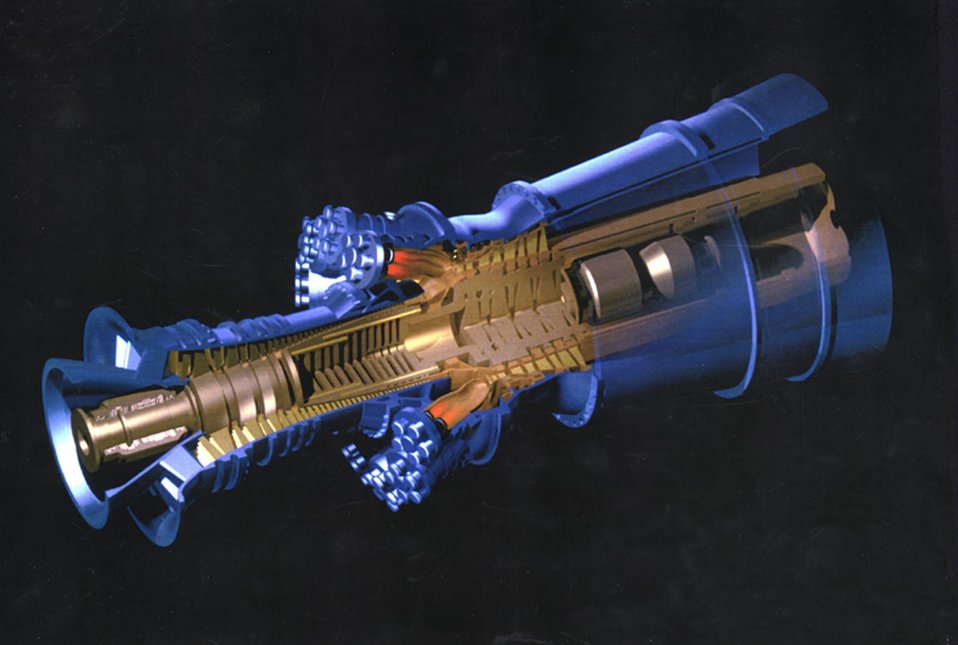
CROSS SECTION OF THE GENERAL ELECTRIC MS9001H ADVANCED GAS TURBINE.

NATURAL GAS TURBINES ARE BEING DEVELOPED TO PRODUCE ELECTRICITY IN A SIMPLE, LOW COST ENVIRONMENTALLY FRIENDLY WAY. DOE'S NATIONAL ENERGY TECHNOLOGY LABORATORY (NETL) INITIATED THE ADVANCED TURBINE SYSTEMS (ATS) PROGRAM AND HAS PARTNERED WITH INDUSTRY TO PRODUCE A NEW GENERATION OF HIGH EFFICIENCY GAS TURBINES FOR CENTRAL STATION ELECTRICITY PRODUCTION, USING CLEAN BURNING NATURAL GAS.